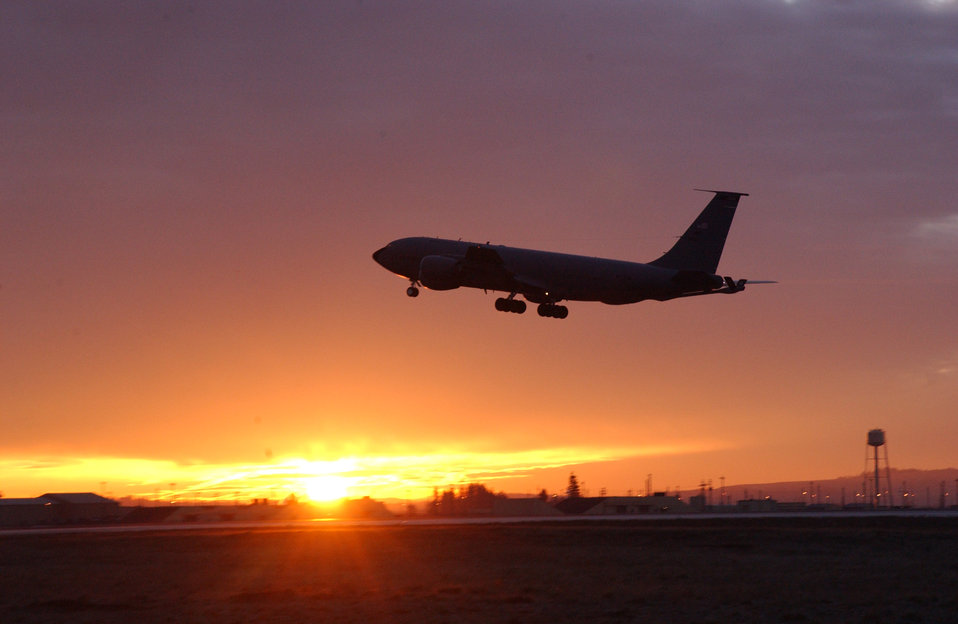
CENTAF releases airpower summary for Feb. 20

Aerial refulers, like the KC-135 Stratotanker shown here, pumped more than 2.1 million pounds of fuel Feb. 18 to coalition fighters participating in operations Enduring Freedom and Iraqi Freedom.